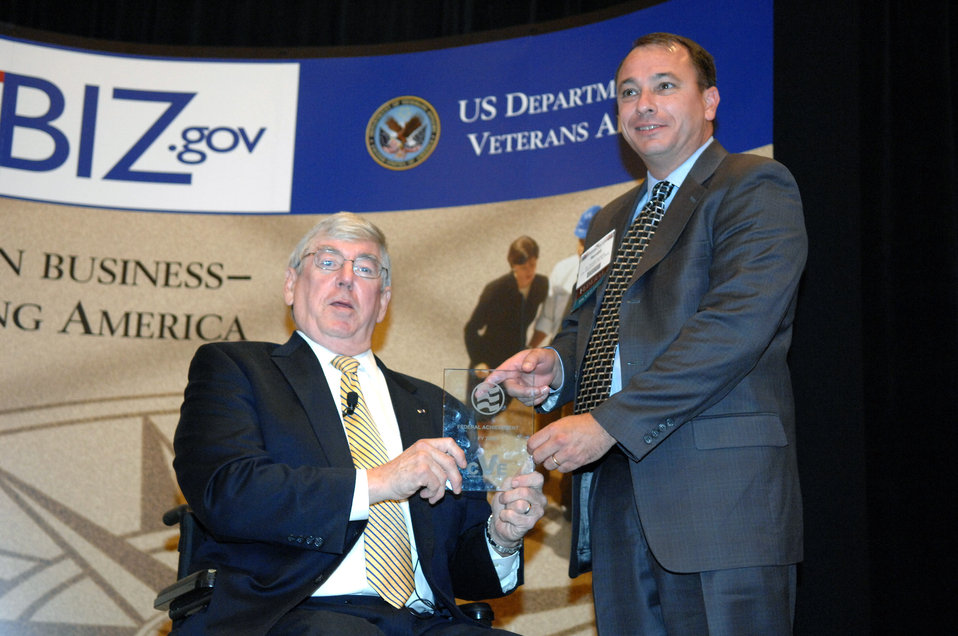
Air Force recognized for awarding veterans contracts

Deputy Secretary of Veterans Affairs Gordon H. Mansfield presents the Air Force Award to Ronald A. Poussard, director of Air Force Office of Small Business Programs during the 6th Annual Awards Program June 27 at Caesars Palace in Las Vegas. The Department of Veterans Affairs recognized 23 Air Force bases for achievement under the Champions of Veteran Enterprise program.